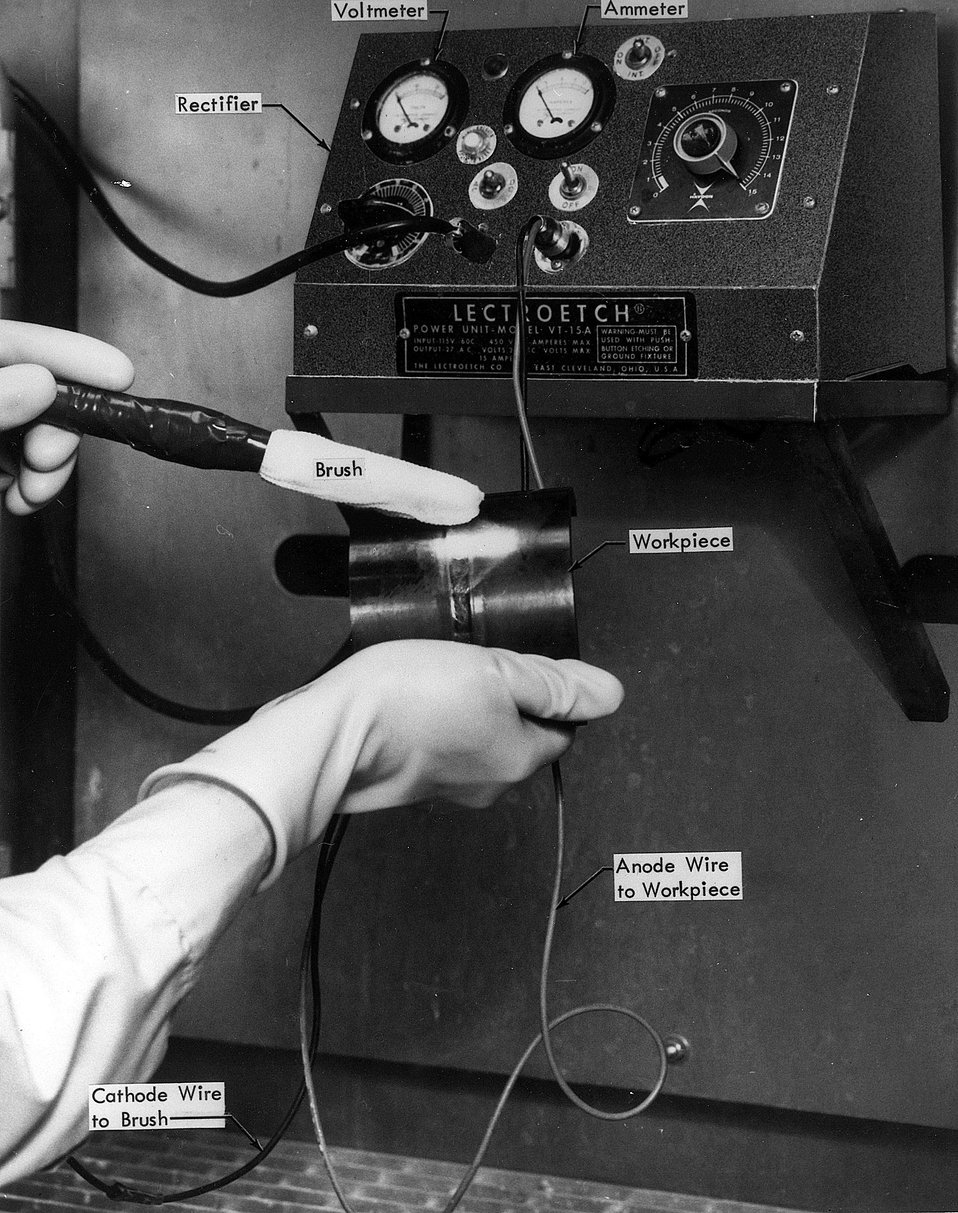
A portable electropolishing system which removes corrosion from metal products has been developed at the Oak Ridge Y-12 Plant in Tennessee. The hand-held unit can be operated on a work bench and permits the removal of small areas of corrosion without disturbing other areas of a metal work piece. Circa 1972.